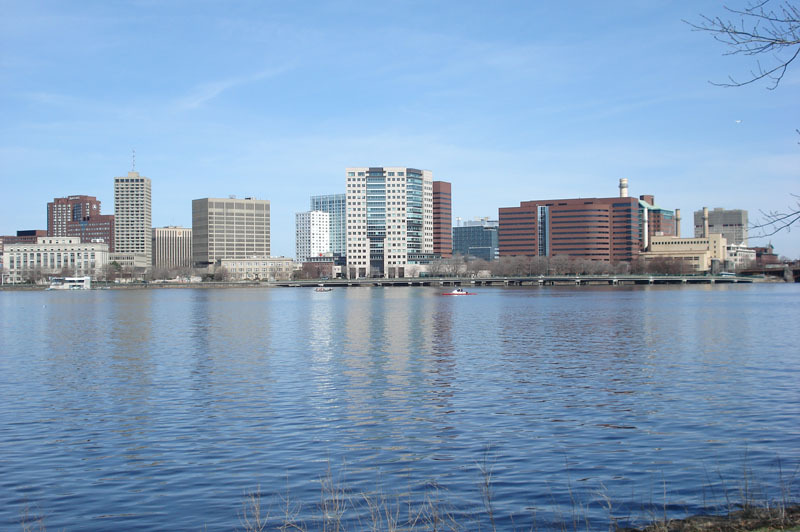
Cambridge Skyline